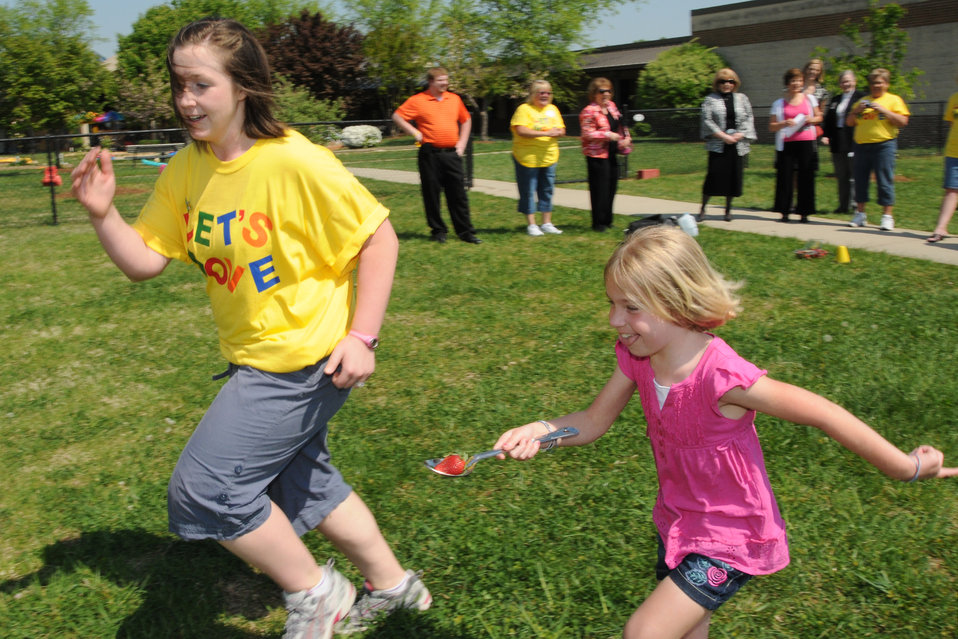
Lets Move - DSC 2197

Physical Education Teacher Mandy Davis runs with a Thomasville Primary School student in the “strawberry in a spoon race” as part of their Let’s Move program inspired by First Lady Michelle Obama. The school received a USDA HealthierUS School Challenge Gold Award.